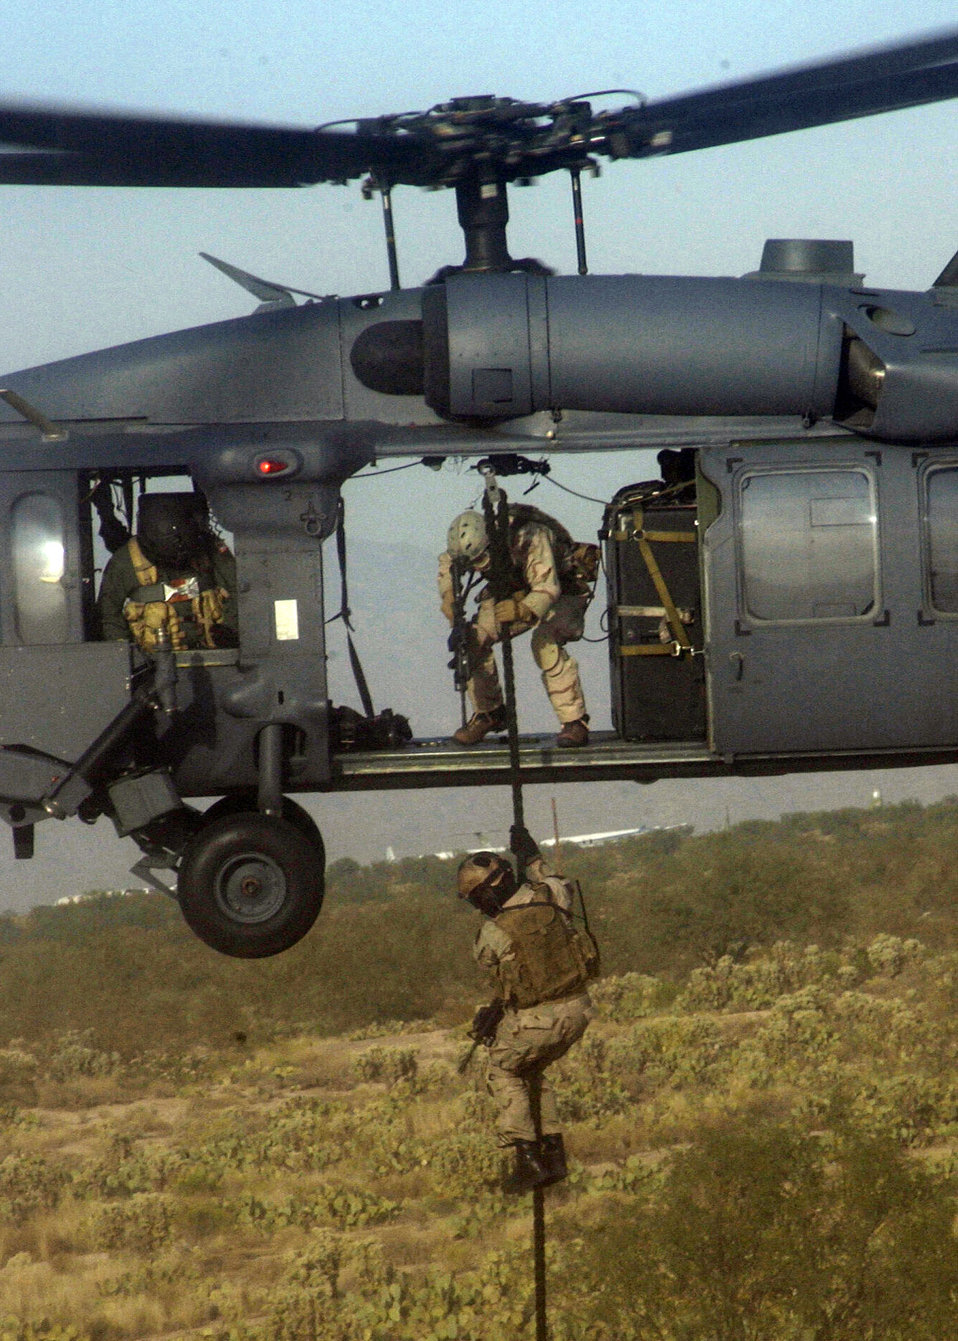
Extraction exercise

DAVIS-MONTHAN AIR FORCE BASE, Ariz. (AFPN) -- Pararescuemen from the 306th and 48th Rescue Squadrons fast rope from an HH-60G Pave Hawk helicopter to retrieve